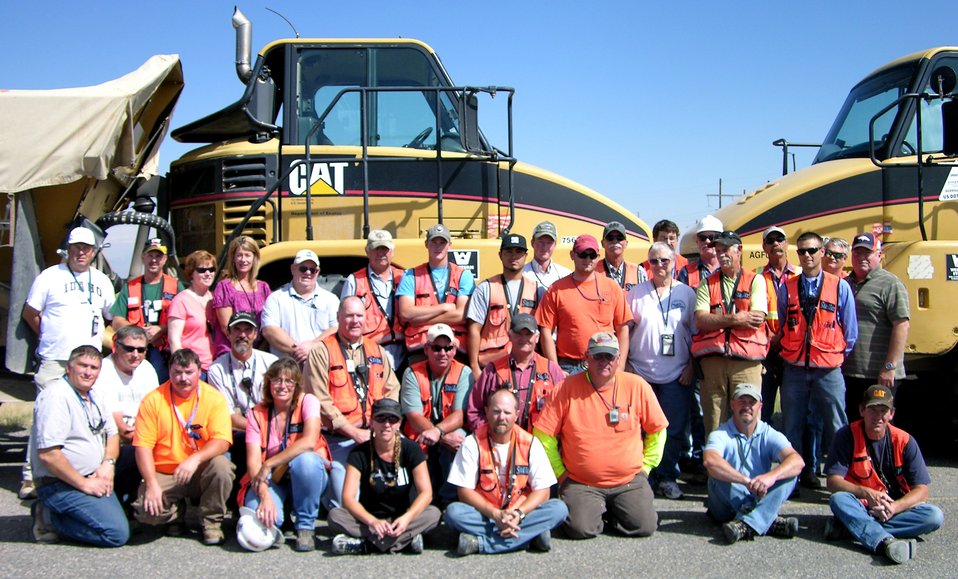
Idaho CERCLA Disposal Facility achieves four years without a recordable injury

On Thursday, August 25, 2011, Idaho CERCLA Disposal Facility (ICDF) employees and Nick Lombardo, president of S.M. Stoller Corporation, celebrated four years without a recordable injury. (An injury or illness resulting in medical treatment beyond first aid, usually treatment provided by a physician such as setting fractured bones, issuance of prescription medicines, and/or referral to physical therapy. In addition, injuries and illnesses must be recorded if the event causes days away from work, restricted activity, or transfer to another job.)